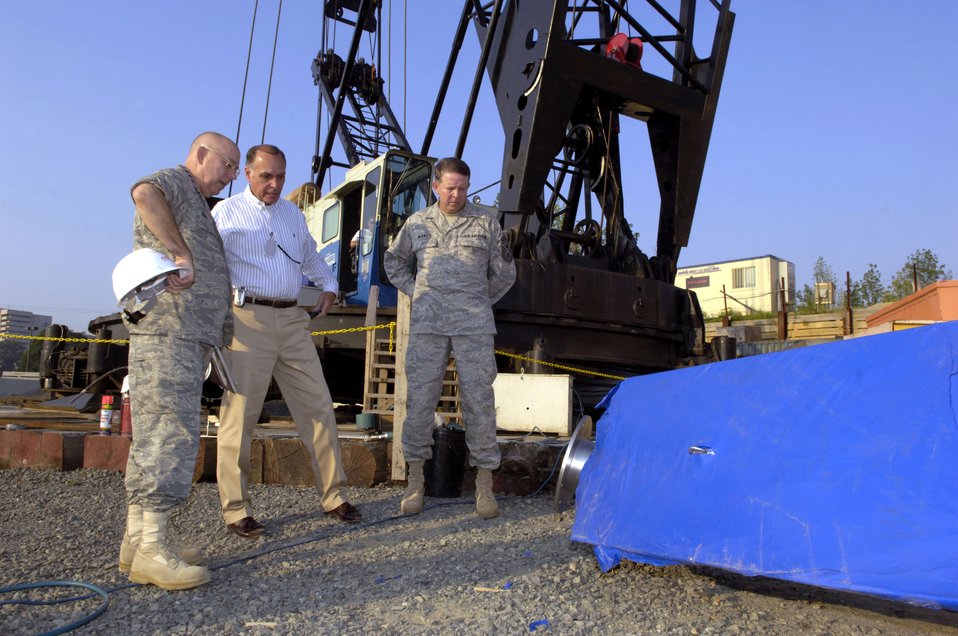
Air Force leaders sign memorial spire

Retired Major Gen. Edward F. Grillo, Jr., Air Force Memorial Foundation president, shows Chief of Staff of the Air Force Gen. T. Michael Moseley and Chief Master Sergeant of the Air Force Rodney J. McKinley around the site of the Air Force Memorial during a visit to the site in Arlington, Va. Aug 3. The memorial is scheduled to be completed on Oct. 14.